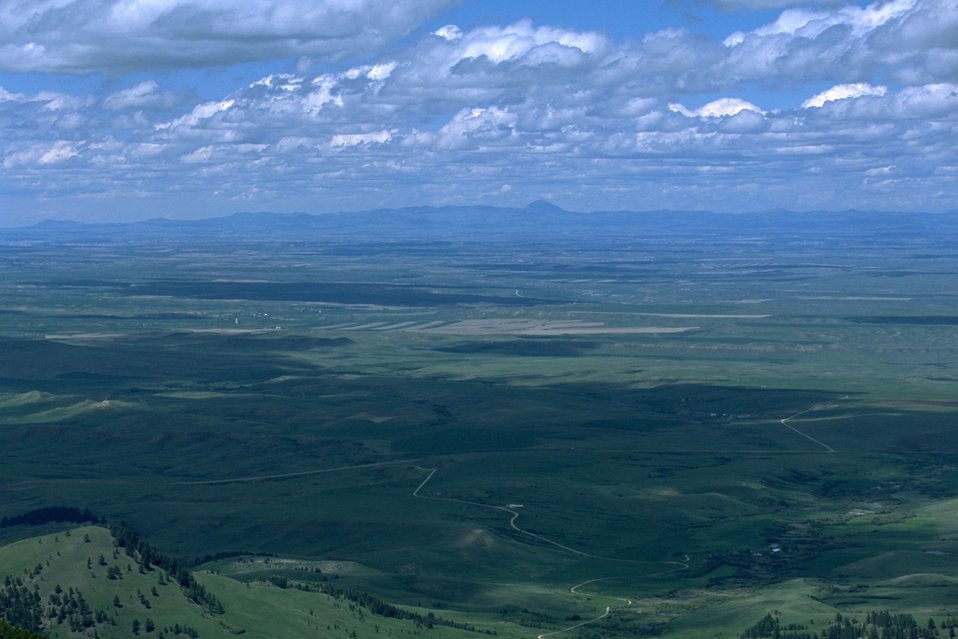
Shadows covering a valley in the North Mocassin area